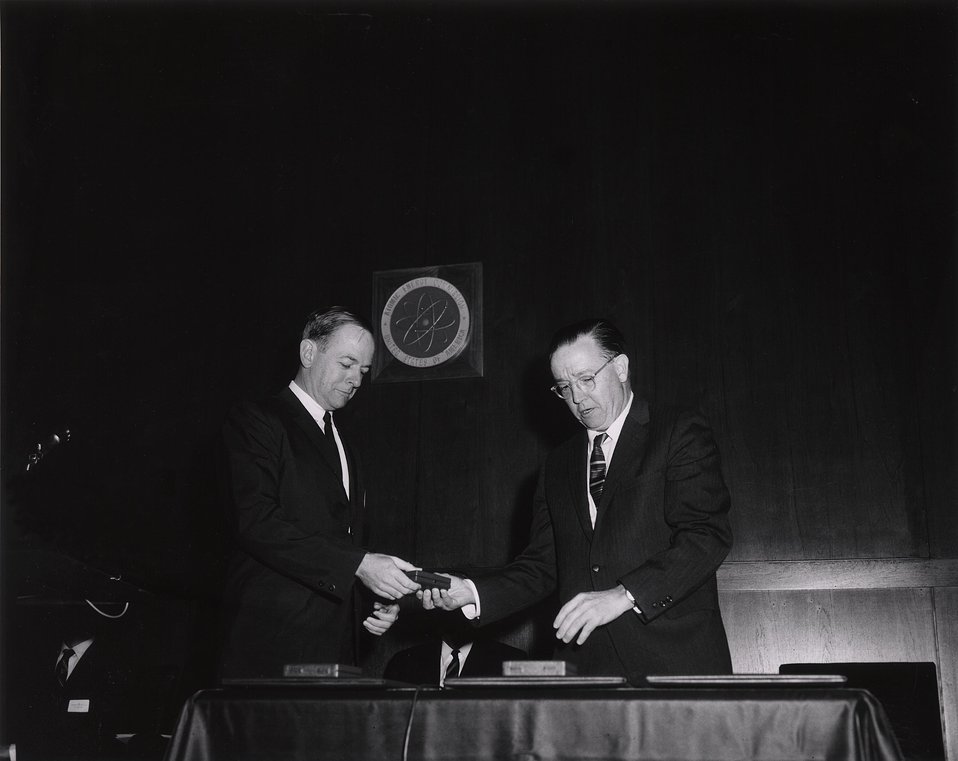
E.O. Lawrence Awards, 1967. Carnegie Institution Auditorium. April 27, 1967. L- Dr. Allan F. Henry. R- Commissioner Ramey.